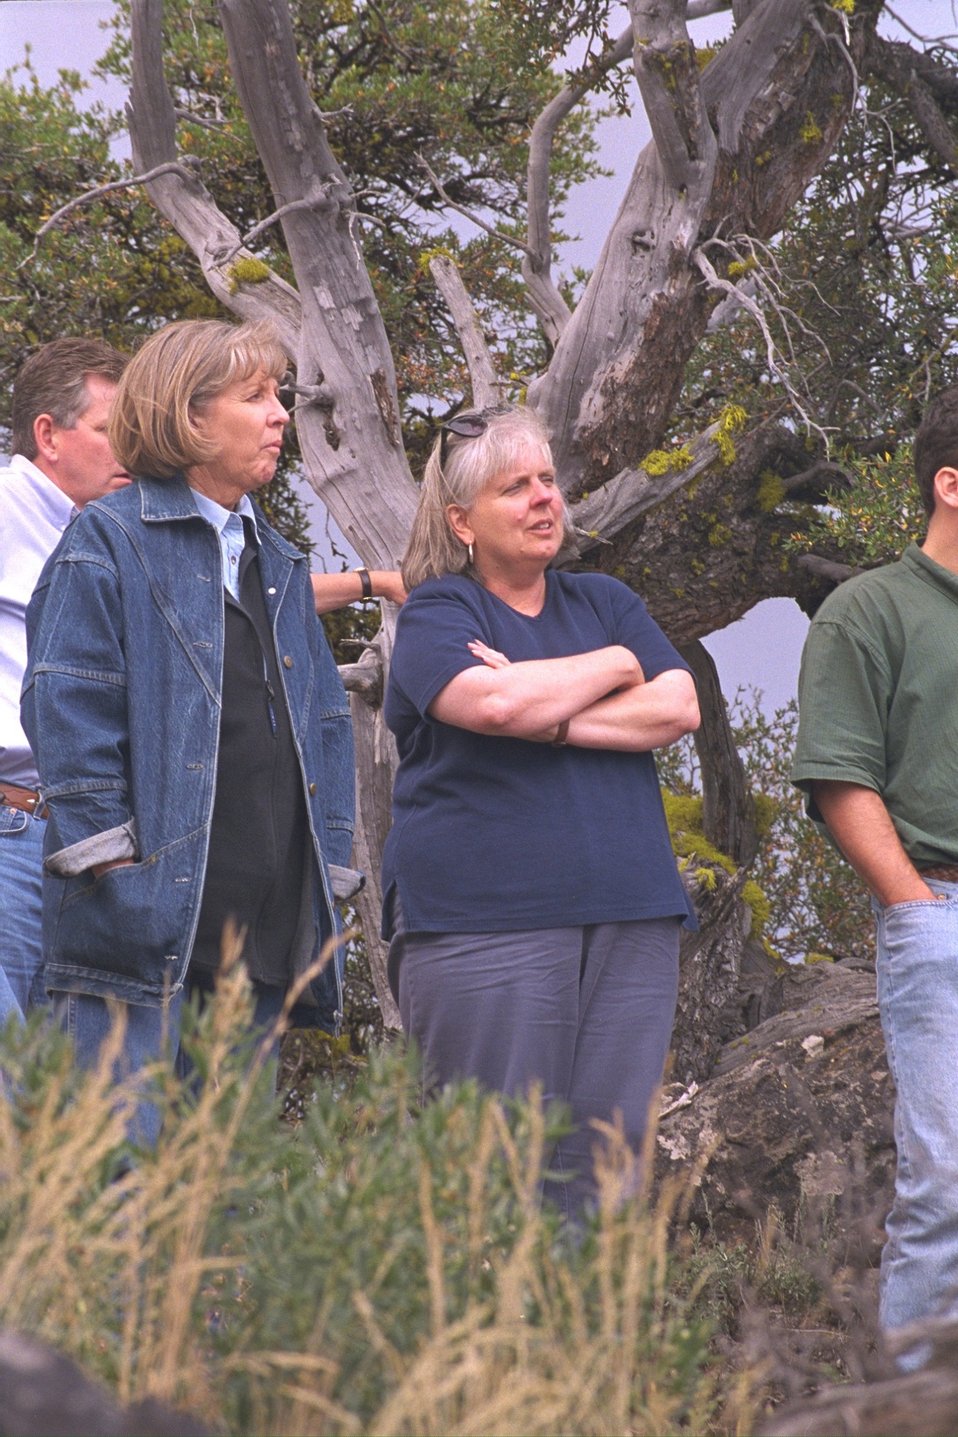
Connie Hatfield, on left, and Elaine Zielinski, on the right, at Secretary Babbitt's Steens tour.